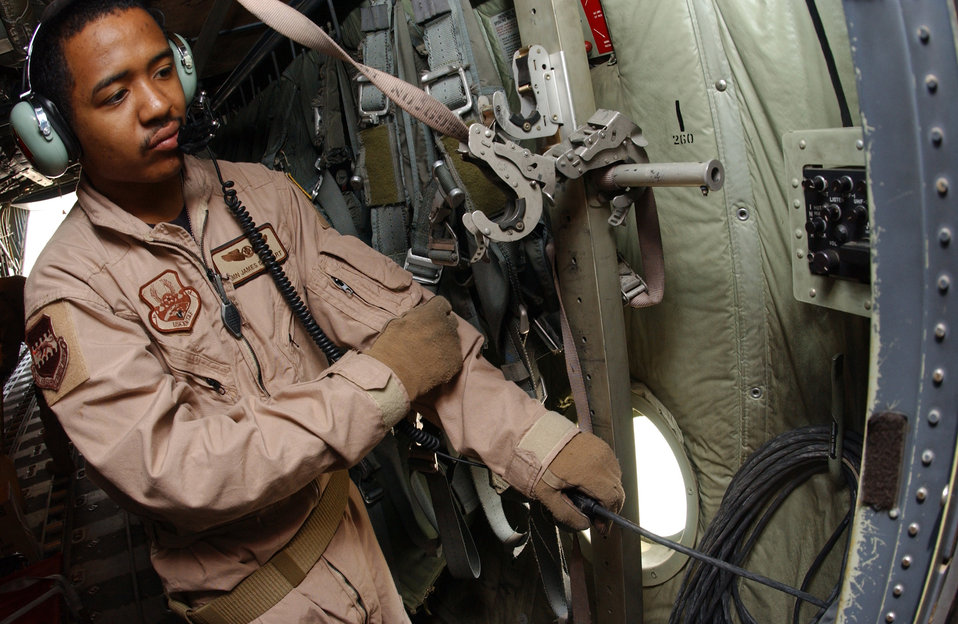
C-130s keep convoys out of Sunni Triangle

Airman James Stewart prepares his communication equipment for a flight out of Balad Air Base, Iraq, earlier this month. The Airman is with the 777th Expeditionary Airlift Squadron.